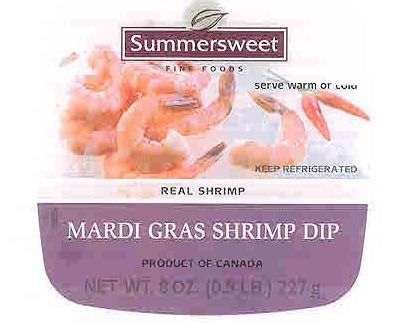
RECALLED - Dip and Mousse

April 15, 2011 - Product Recall - Charcuterie La Tour Eiffel Recalls Mousses and Dips.